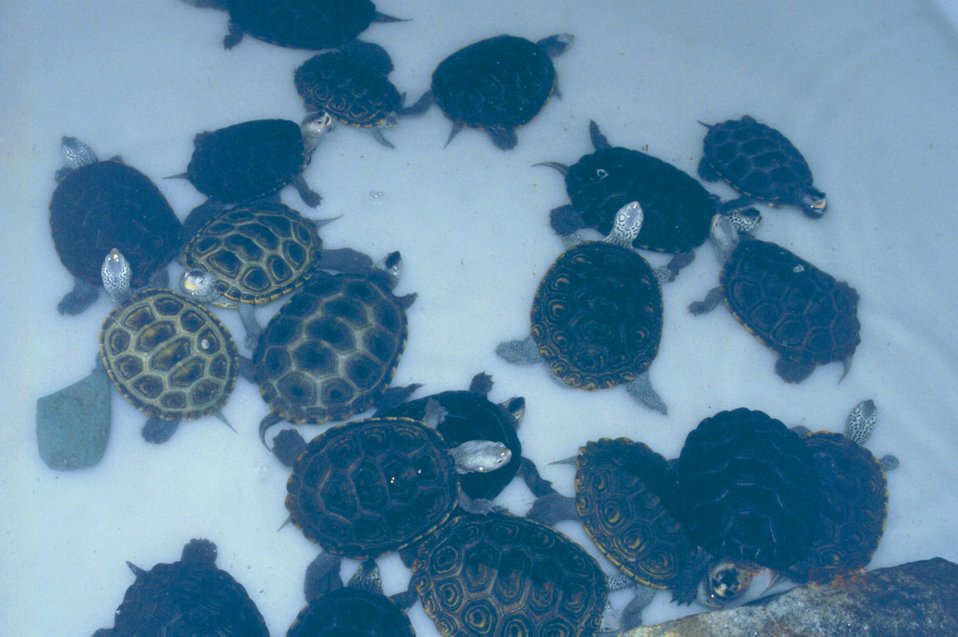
Maryland terrapins being raised as part of a conservation effort.